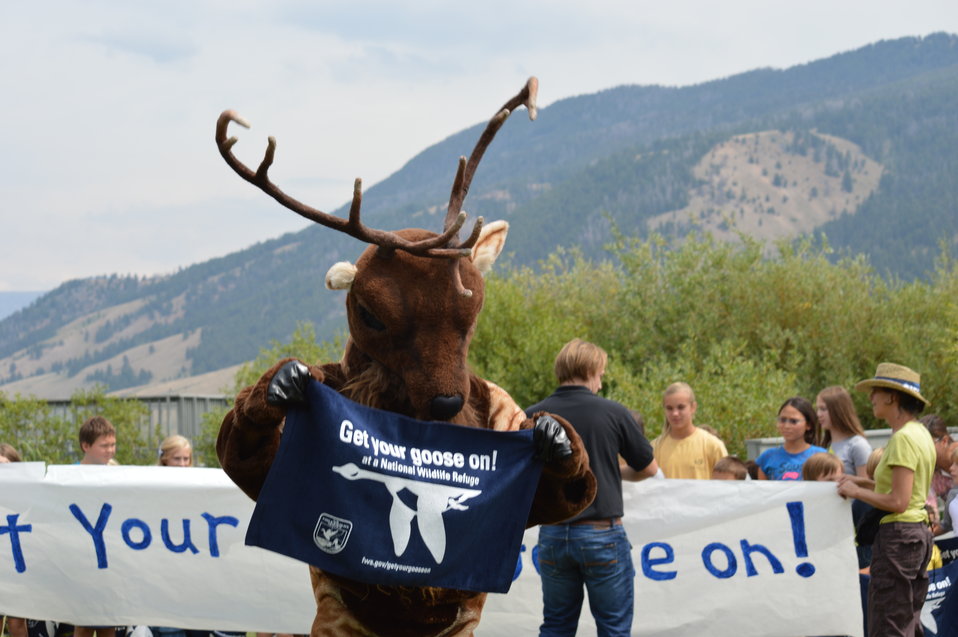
Get Your Goose On! - National Elk Refuge Style

On August 10, 2012 the U.S. Fish and Wildlife Service and Partners celebrated the 100 year anniversary of the establishment of the National Elk Refuge. In these photos, young attendees, along with Puddles the Blue Goose and the National Elk Refuge's mascot, showed us how to Get Your Goose On! with style.